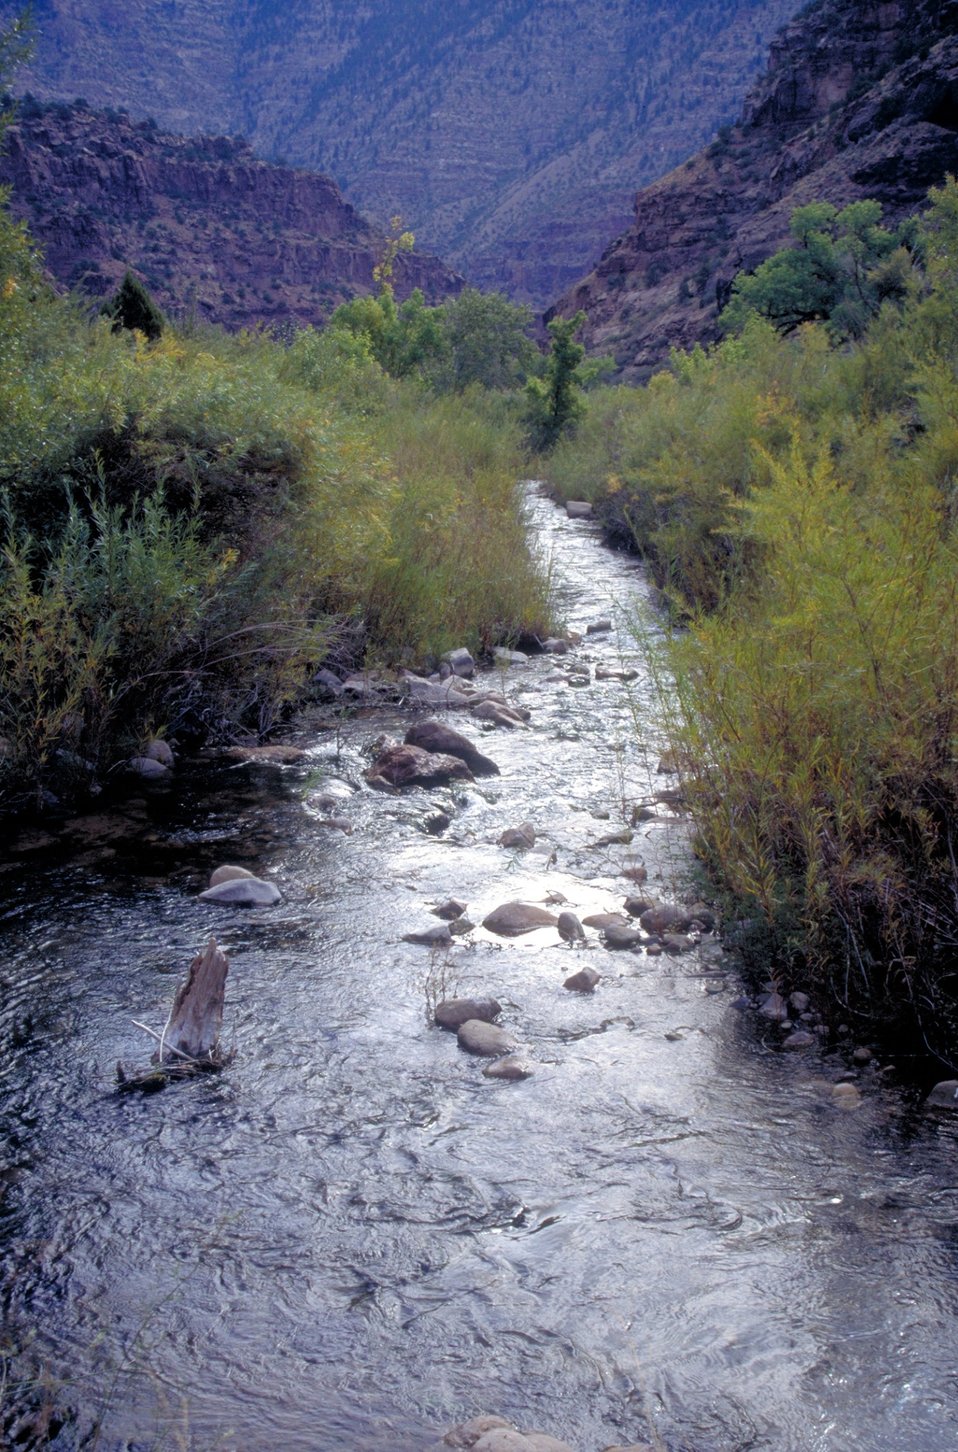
Desolation/Gray Canyons near Price, Utah.